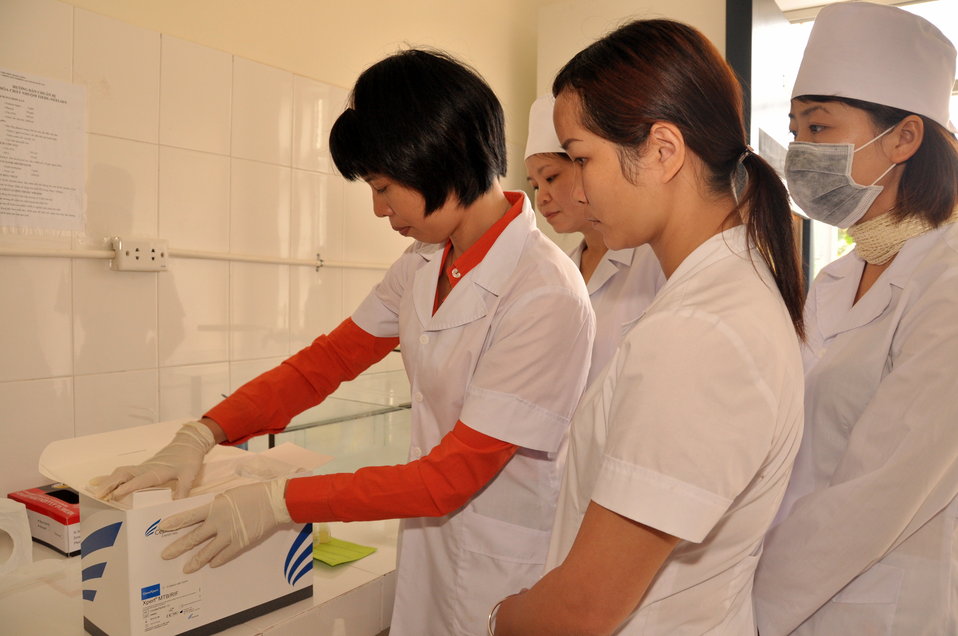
USAID supports new rapid detection TB equipment